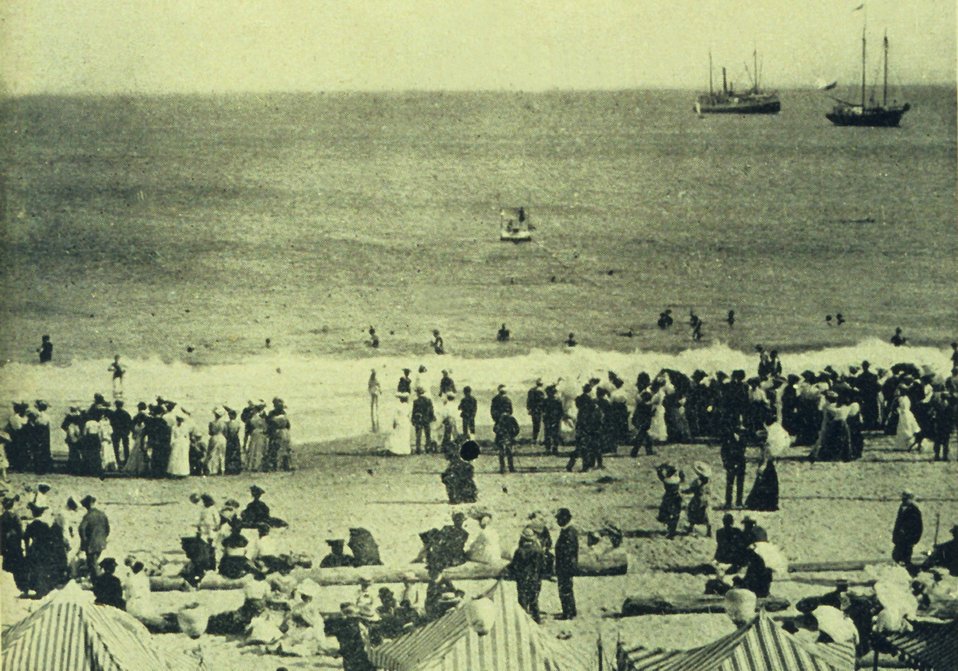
A beach scene at Santa Cruz. Note the offshore anchored raft. In: 'The City of Santa Cruz and VicinityCalifornia.' Published by The Santa Cruz Board of Trade. 1905.